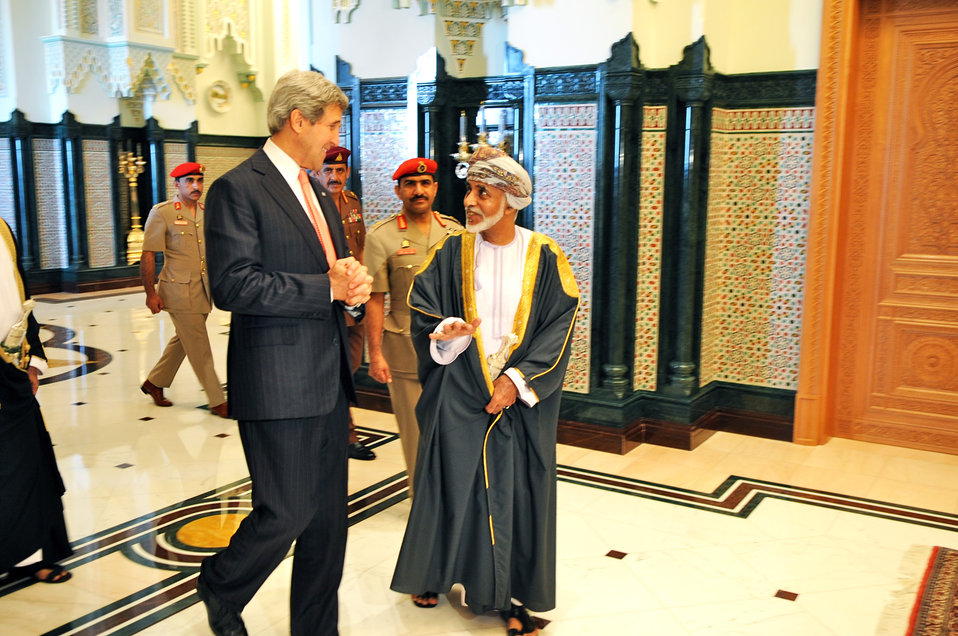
Secretary Kerry Walks With Omani Sultan Qaboos bin Said Al Said

U.S. Secretary of State John Kerry meets with Sultan of Oman Qaboos bin Said Al Said in Muscat, Oman, on May 21, 2013.